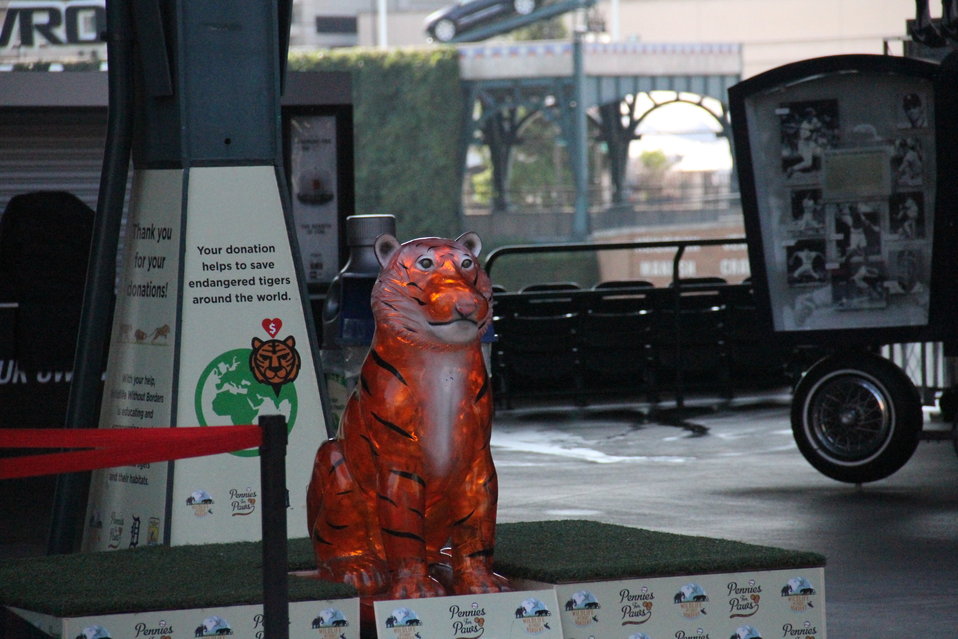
Pennies for Paws (2)